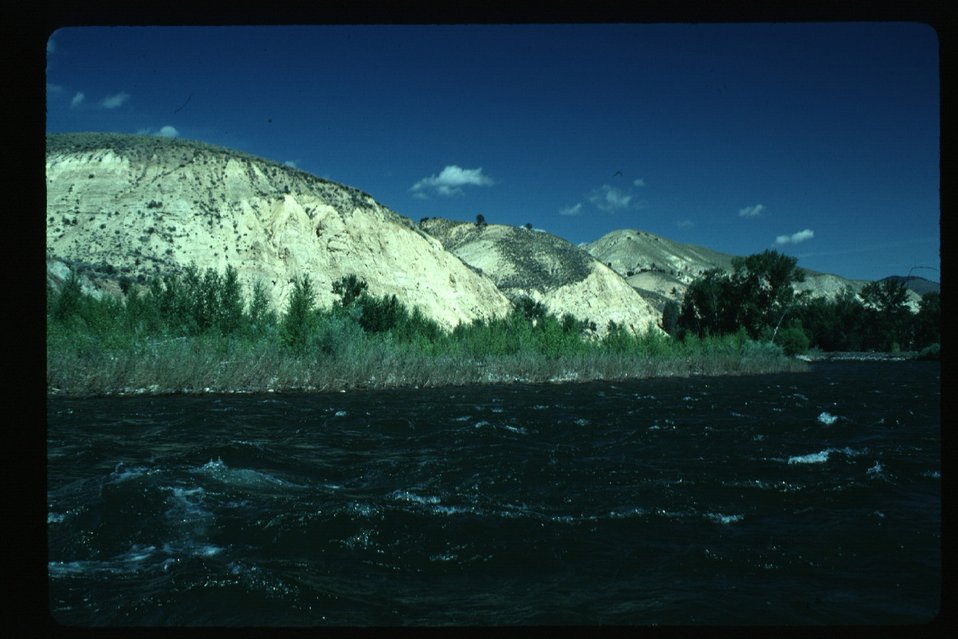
South Fork of Snake River Idaho Falls Field Office USRD Upper Snake River District